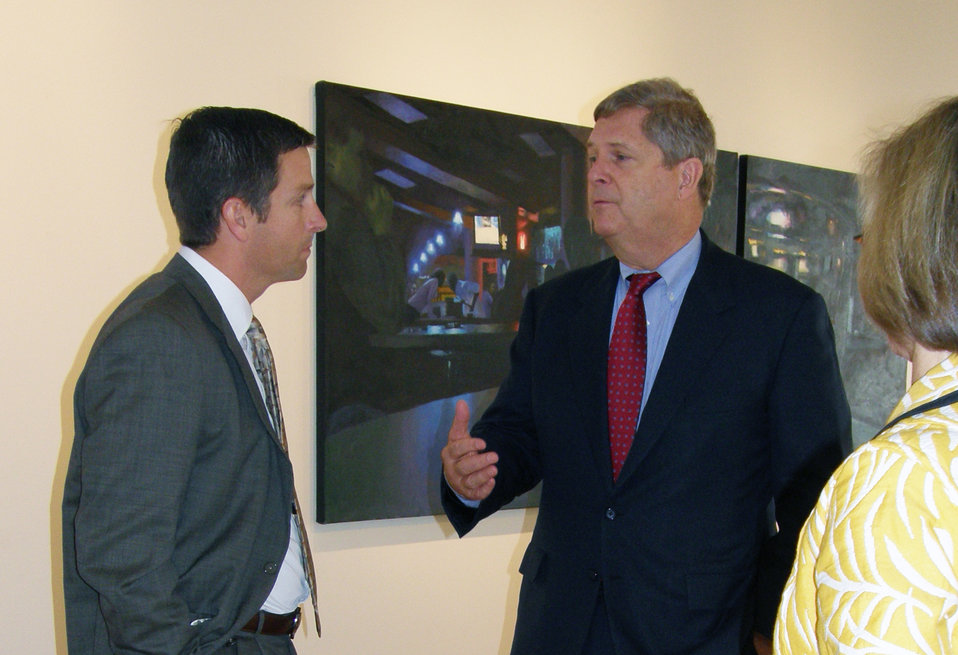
Agriculture Secretary Tom Vilsack talks with Kiley Miller, Chamber President in secretary's hometown of Mount Pleasant, IA, on Saturday, October 8, 2011. Secretary Vilsack is in Iowa to promote President Obama's American Jobs Act and trade agreements.